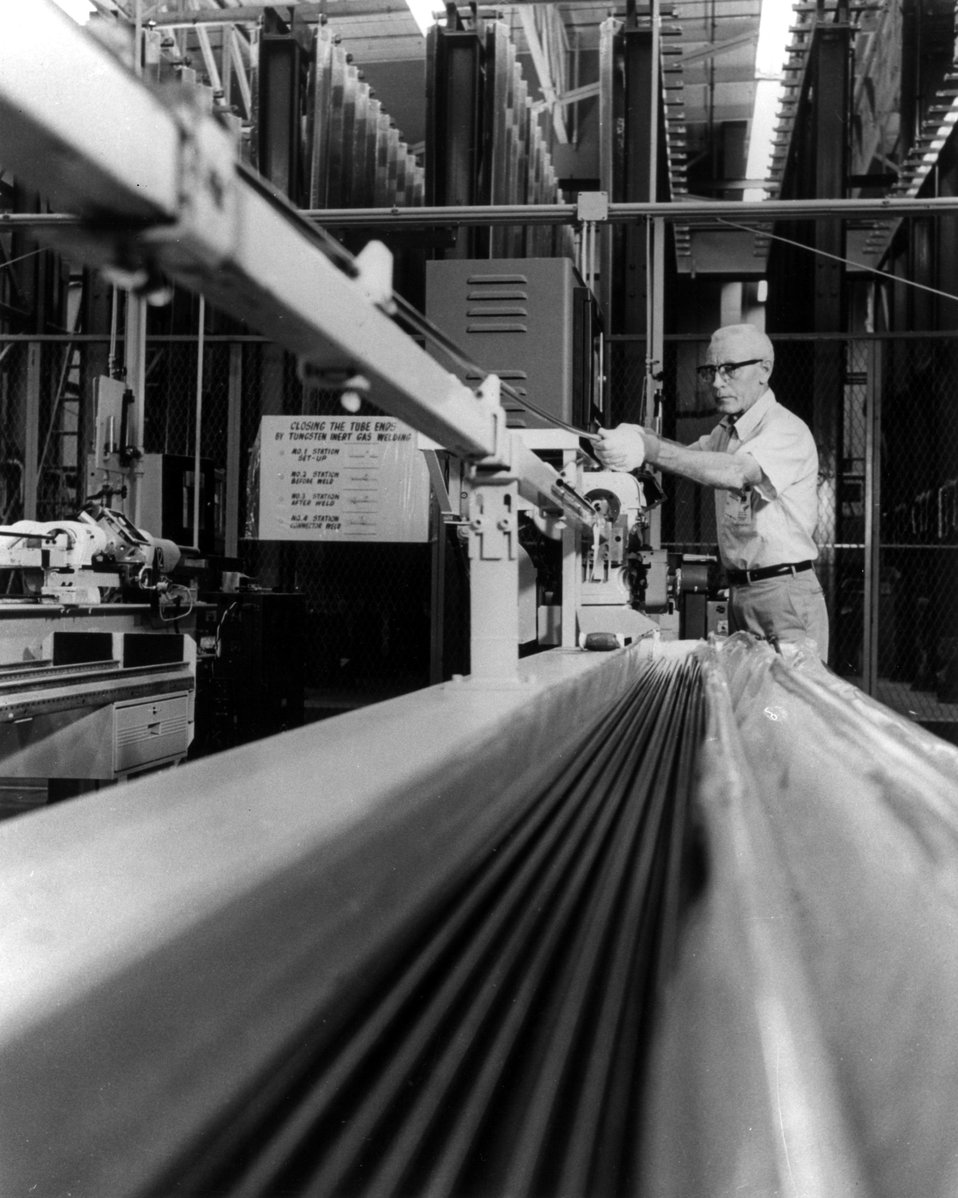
Tube ends of nuclear rods are precision welded at fuel production facility of General Electric's Atomic Power Equipment Department in San Jose, California. c. 1967